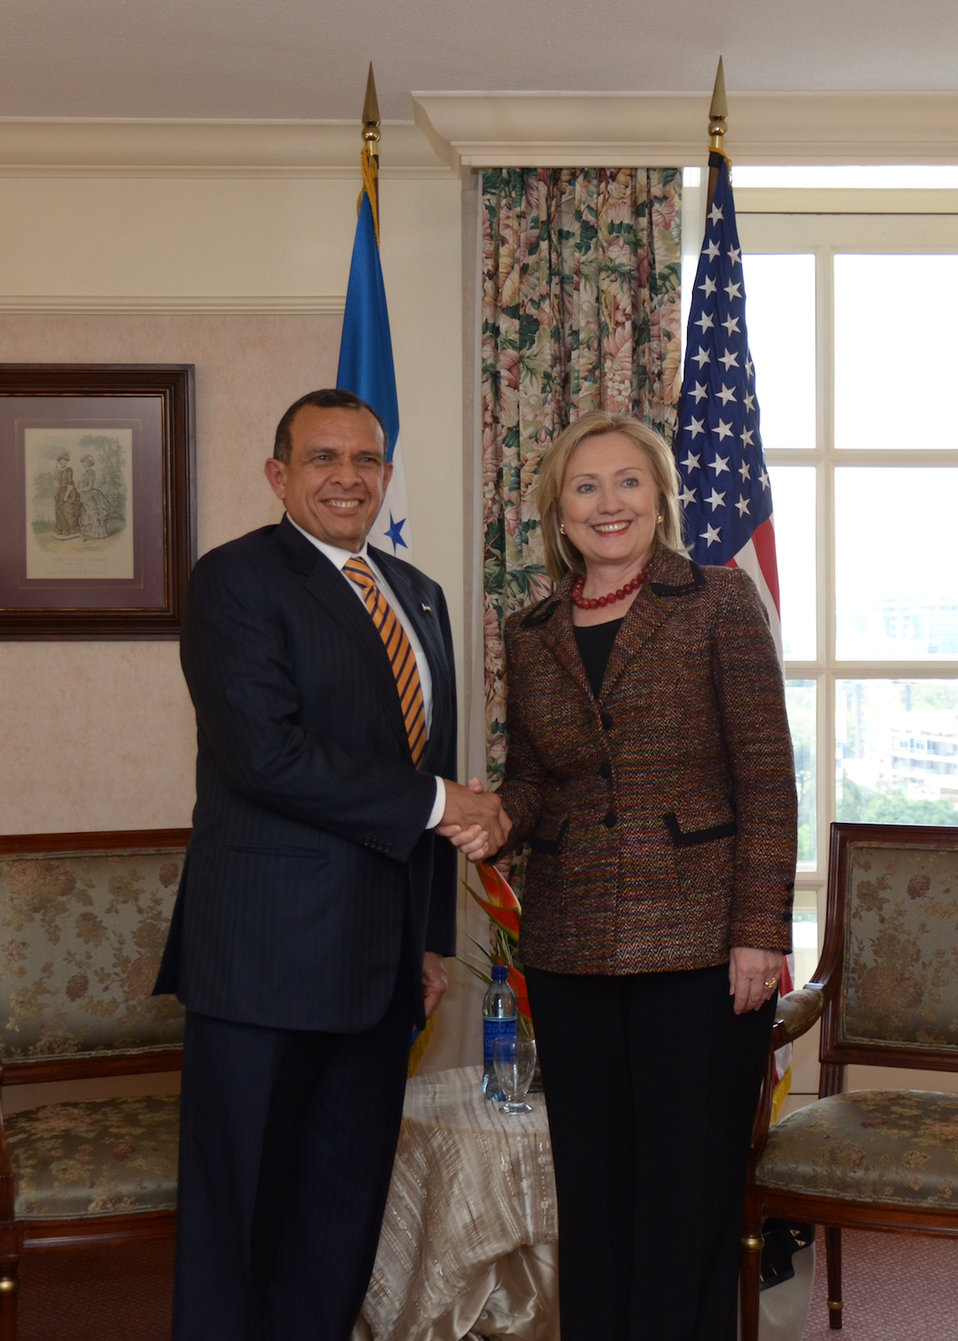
Secretary Clinton Is Greeted By Honduran President Lobo

U.S. Secretary of State Hillary Rodham Clinton is greeted by Honduran President Porfirio Lobo in Guatemala City, Guatemala, on June 22, 2011.